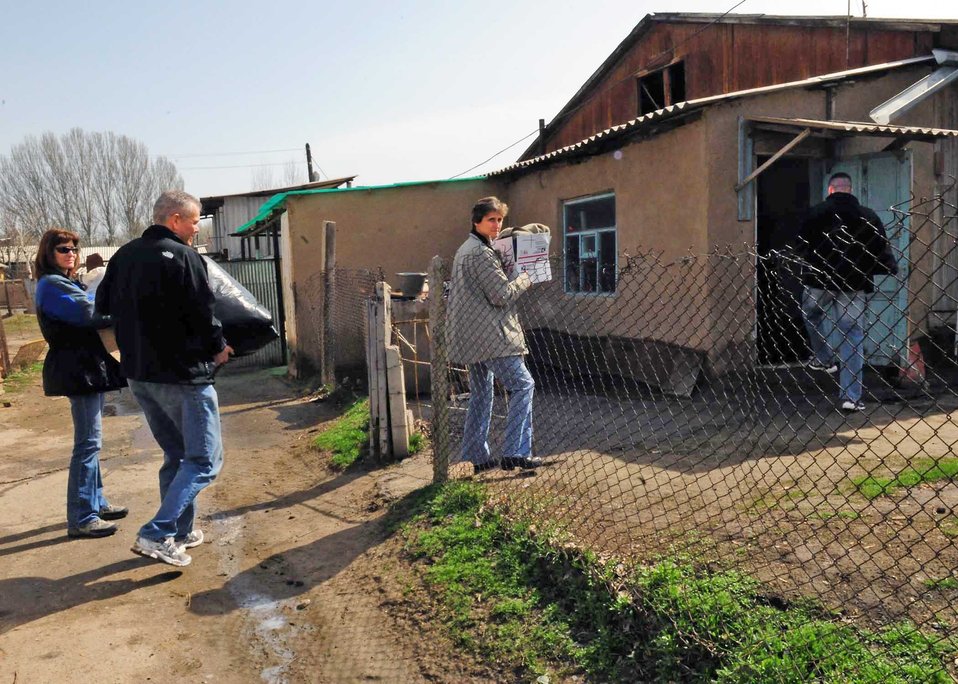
Manas Airmen deliver care packages to Kyrgyz villagers

People from the Transit Center at Manas, Kyrgyzstan, unload humanitarian assistance items collected from stateside bases and friends to distribute to families March 18, 2010, in Manas Village.